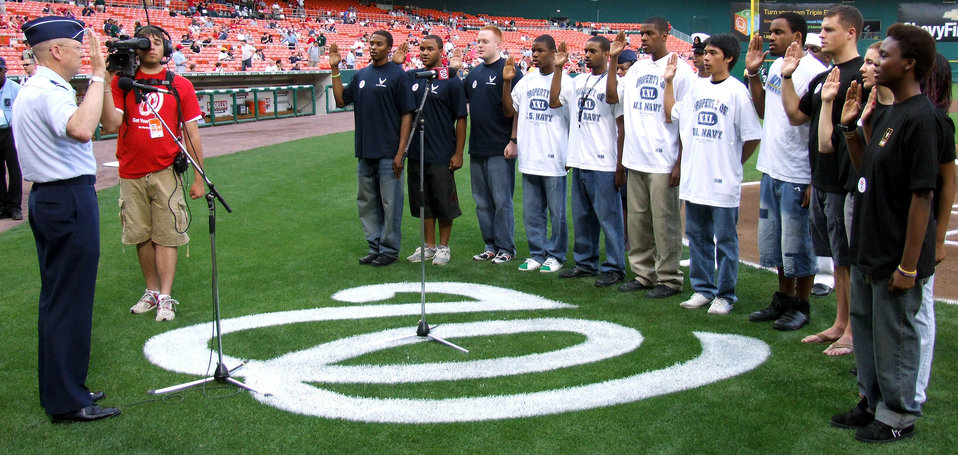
Major League Baseball team honors military service

Twelve recruits -- three Air Force, five Navy and four Army -- take oaths of enlistment at a ceremony presided over by Lt. Gen. (Dr.) James G. Roudebush during pre-game Military Appreciation Night activities May 11 at Robert F. Kennedy Stadium in Washington, D.C. General Roudebush is the Air Force surgeon general.